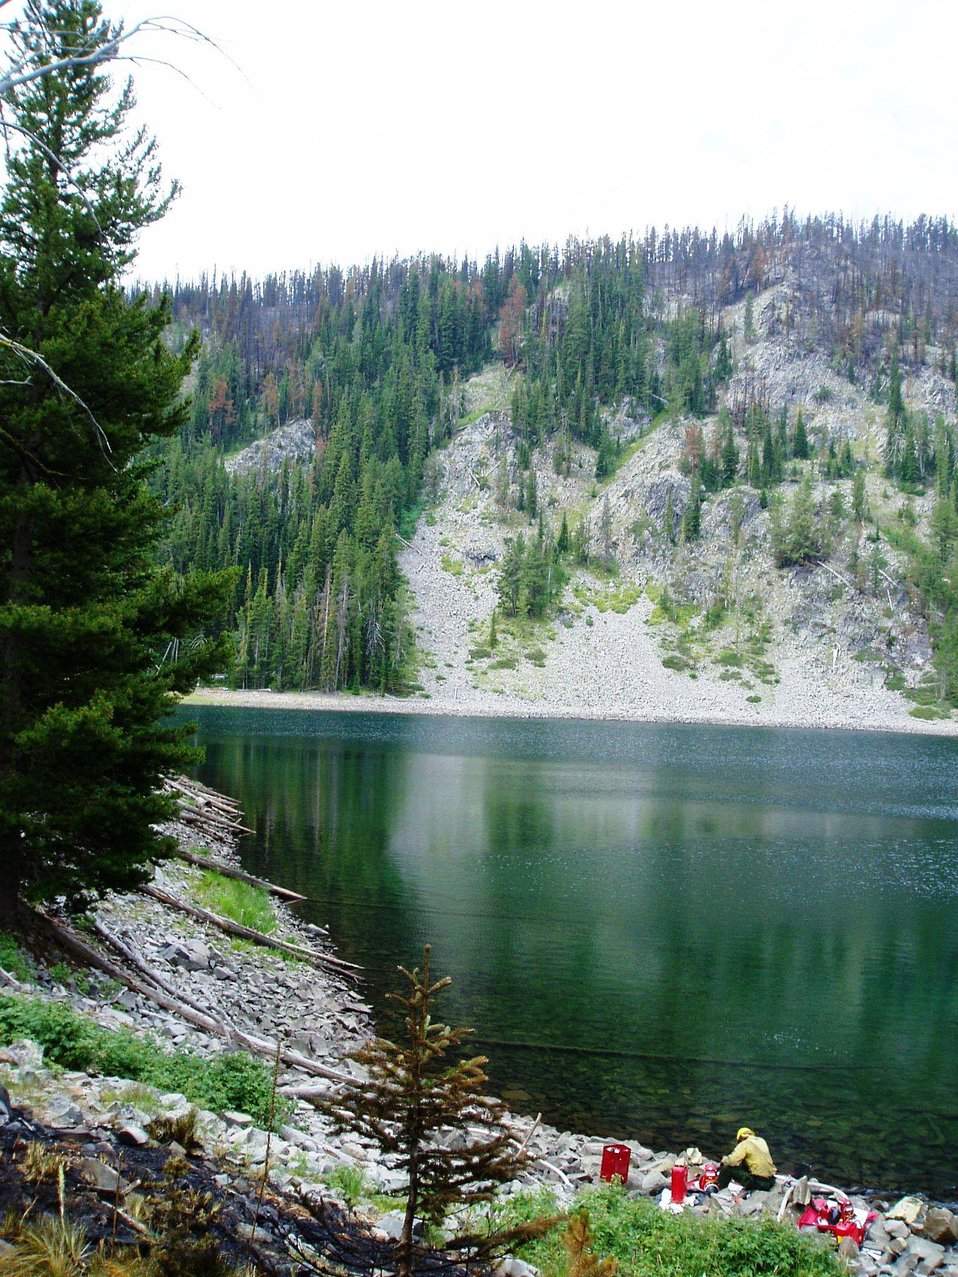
A firefighter sets up water pumps at Whetstone Lake to assist in the fight against the Moose Meadow Fire. The Moose Meadow Fire in the Beaverhead-Deerlodge National Forest near Philipsbug, MT began on Jul. 25, 2013 by lightning has consumed approximately 3,400 acres and is approximately 30% contained.